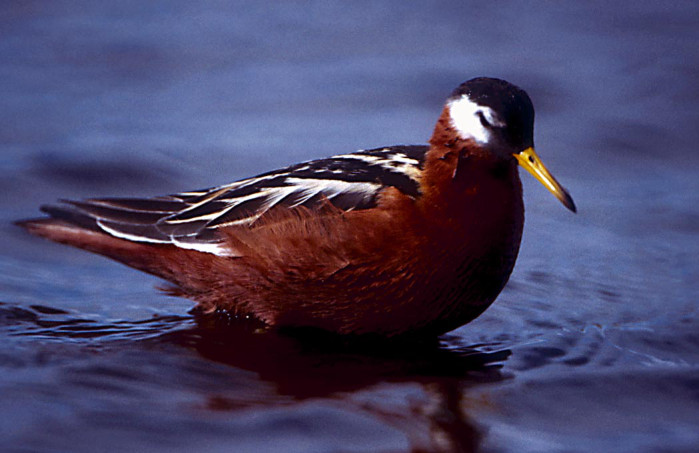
red phalarope